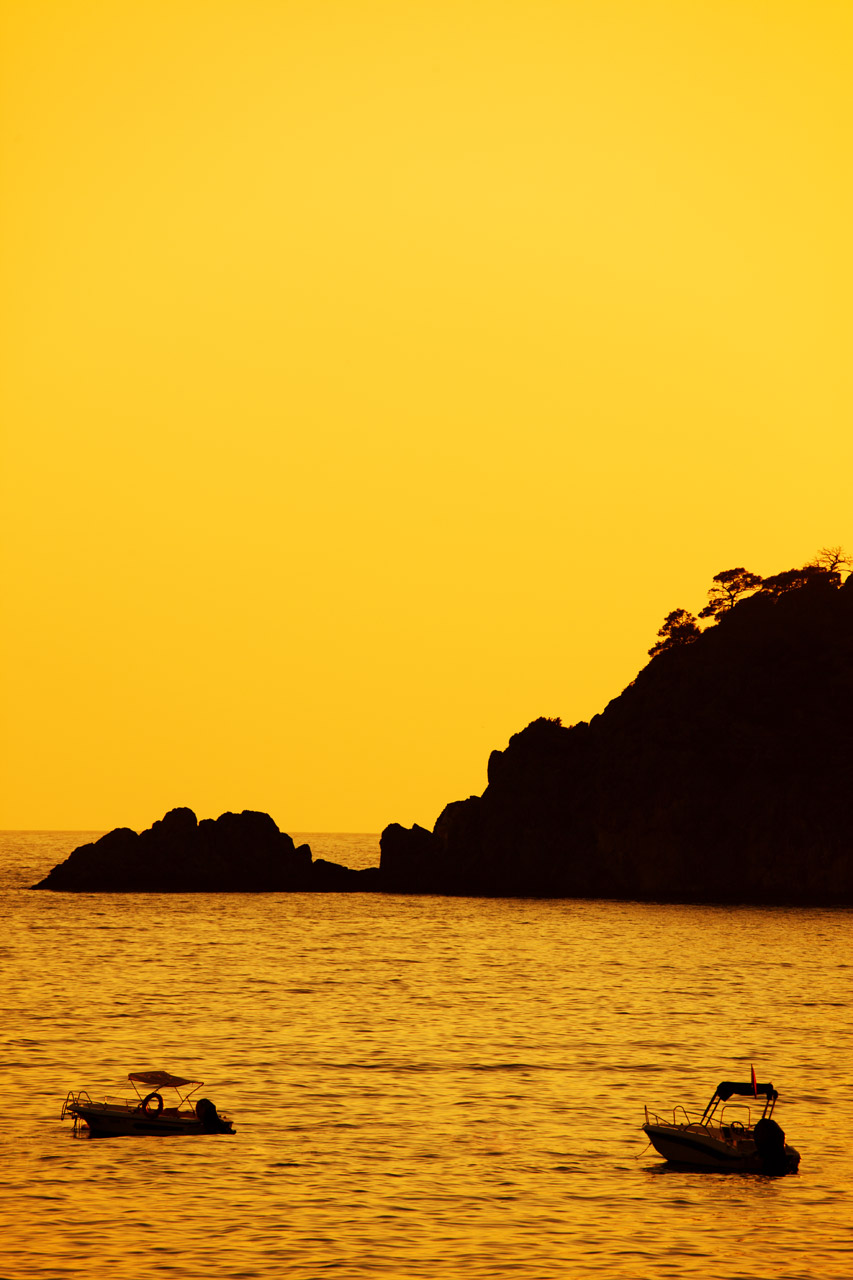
Yellow sunset with boats

Two boats at the sea and yellow sunset.